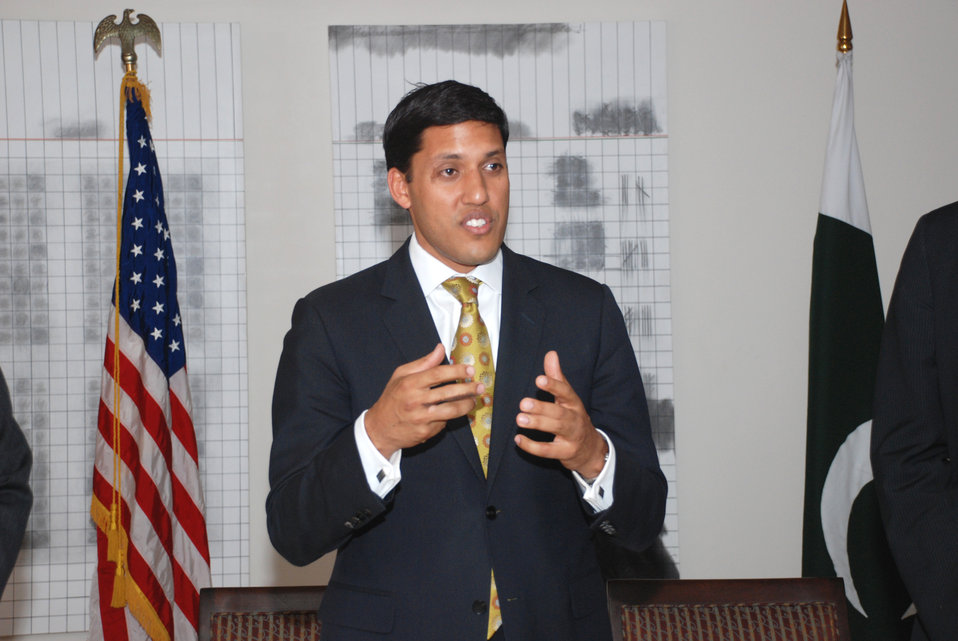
MoU Signing Ceremony between USAID and APF at Islamabad on April 18, 2012

Dr. Rajiv Shah Addressing the Officials